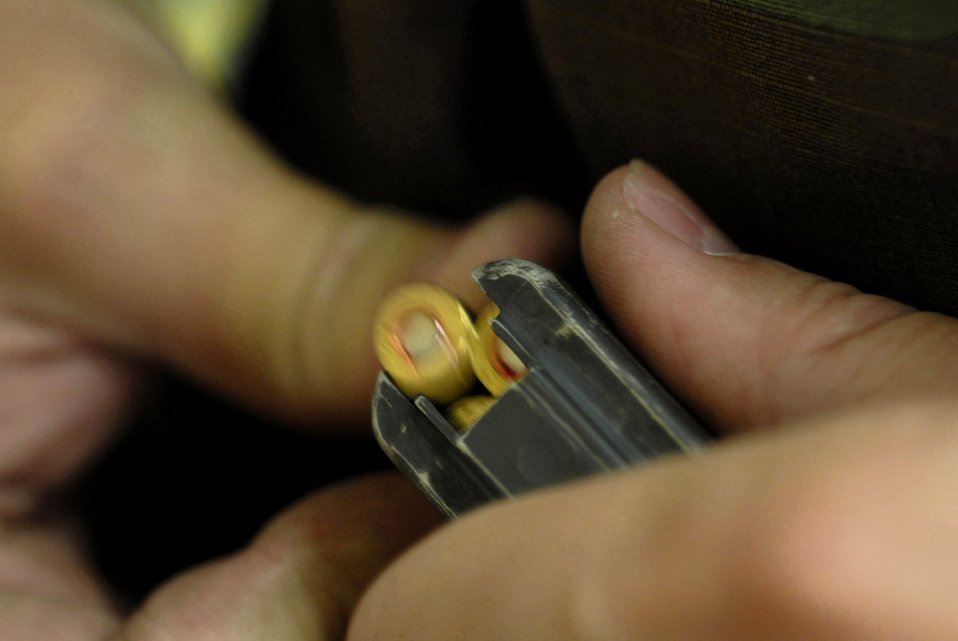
The line is ready, FIRE!

An Airman loads a magazine with 5.56mm ammunition, preparing for the next series of firing April 12 at Luke Air Force Base, Ariz. Airmen must be qualified in their primary weapon prior to deploying in support of the war on terrorism. There are more than 28,000 Airmen deployed around the world today.